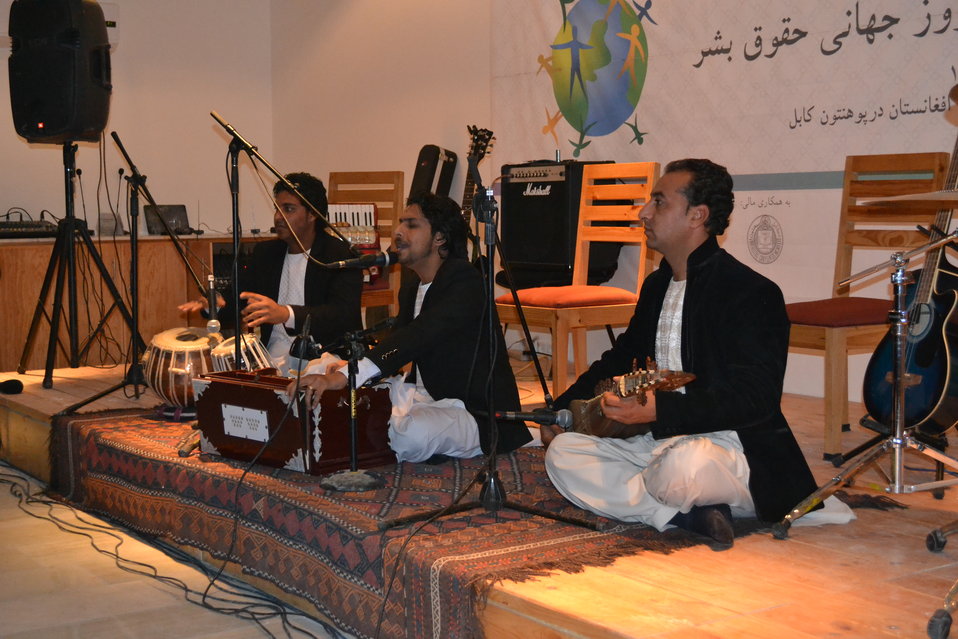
Human Rights Day at the Afghan Center, Kabul University